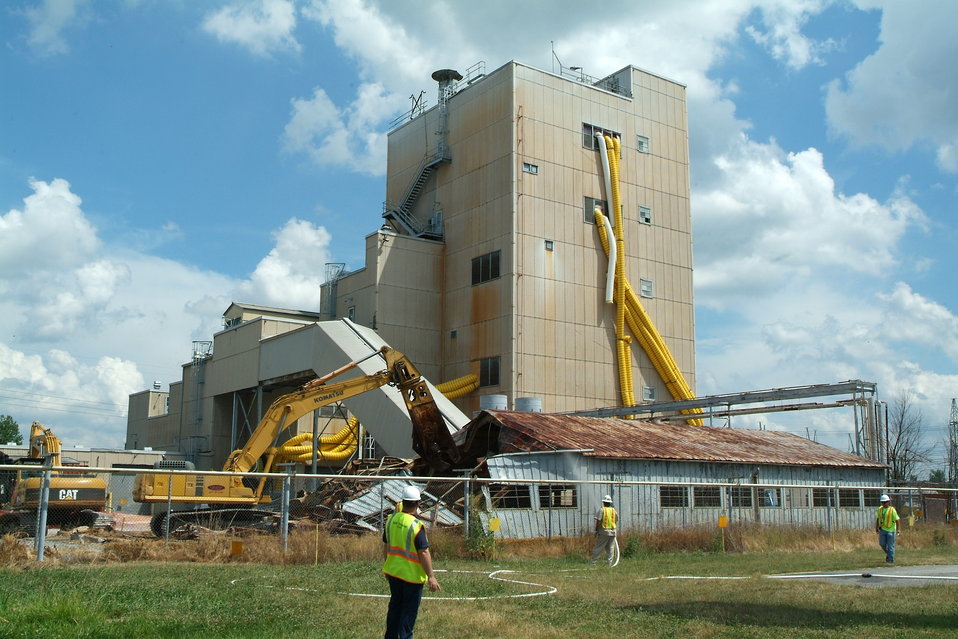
Paducah demolition

Heavy equipment demolishes an ancillary building (foreground) at the Metals Plant in summer 2010. The conveyor system immediately behind the equipment also was demolished.